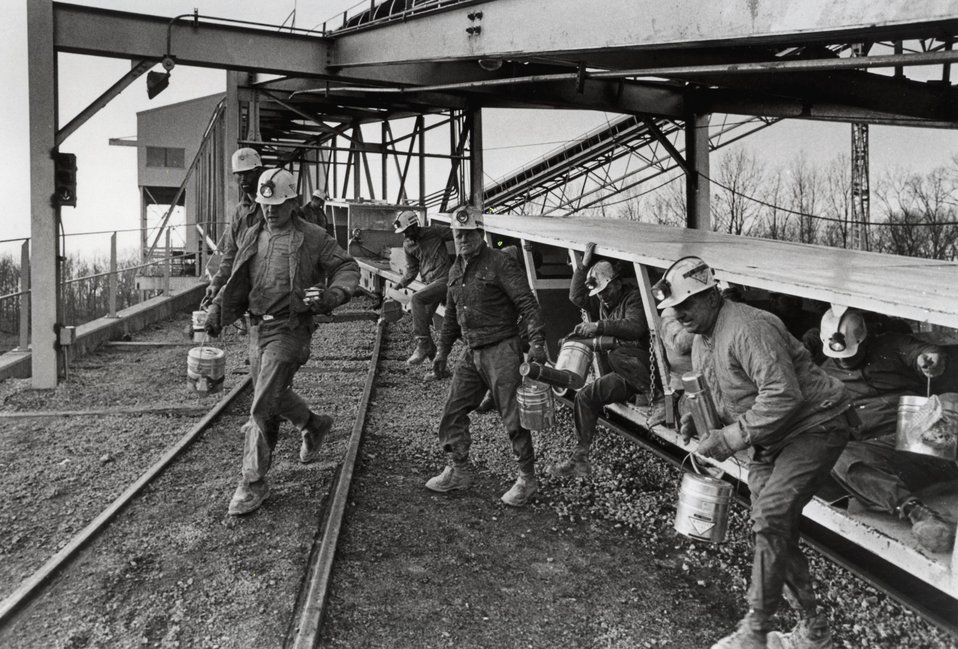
Scrambling out of their steel-roofed personnel carriers, called mantrip cars, miners at a large modern underground coal mine leave work at the end of the shift. c. 1972